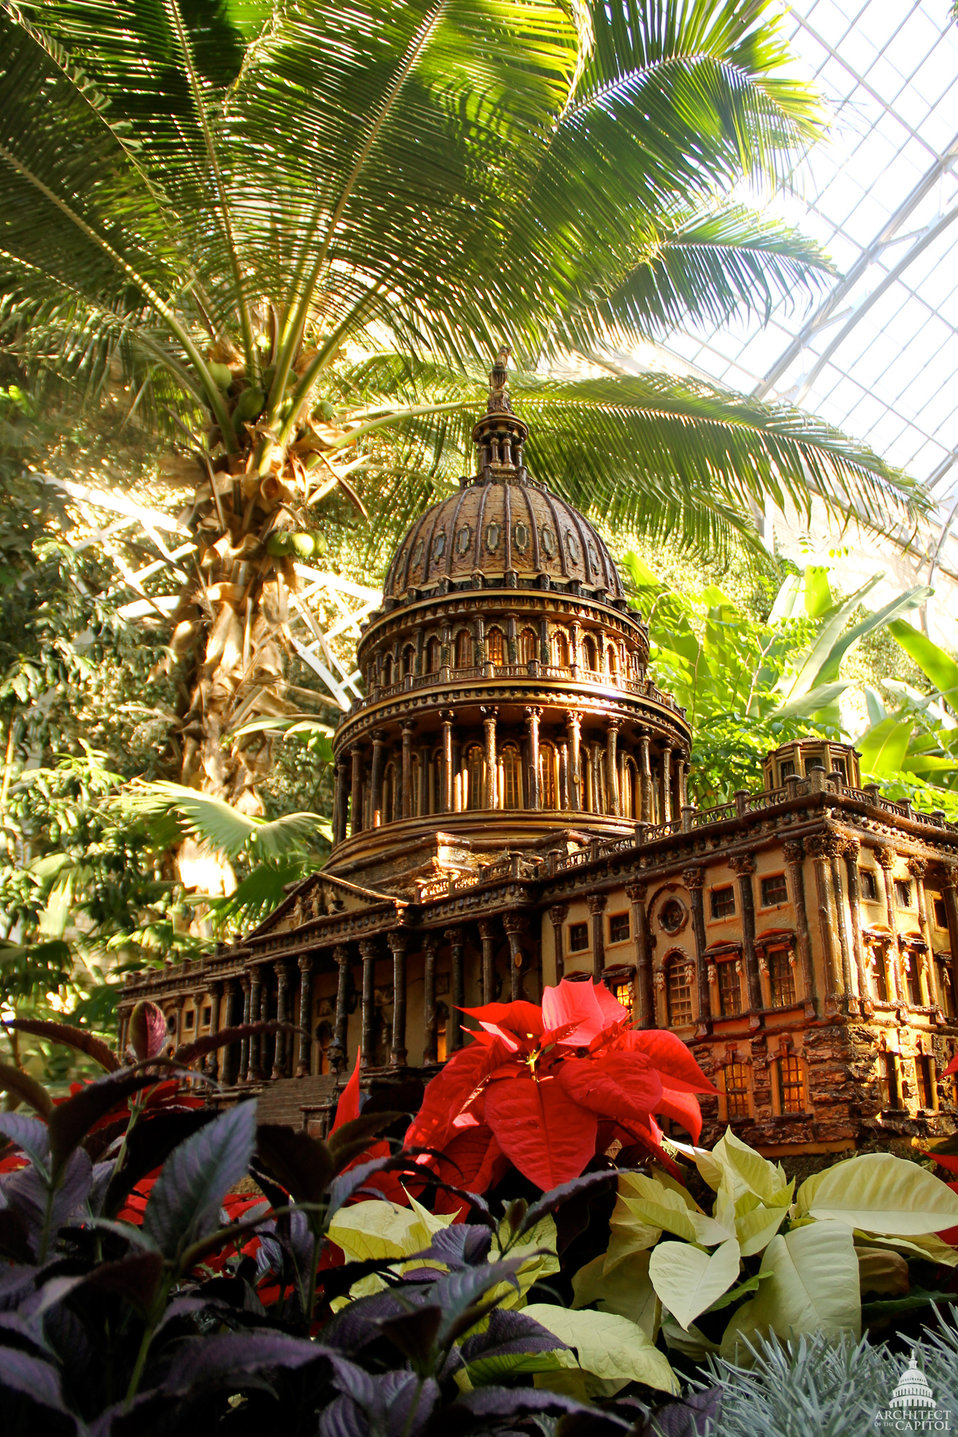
Season's Greenings at the U.S. Botanic Garden

The U.S. Botanic Garden’s annual holiday exhibit, Season's Greenings, is on display November 22 through January 1. The Garden Railway Exhibit in the East Gallery features model trains through an Enchanted Forest with fanciful fairy dwellings along the rail line, all created with plant materials. Enjoy blooming plants throughout the Conservatory and a living history of poinsettias. Don’t miss this popular exhibit, including one of the largest indoor decorated trees in Washington, D.C., and the capital’s landmark buildings in the Garden Court.